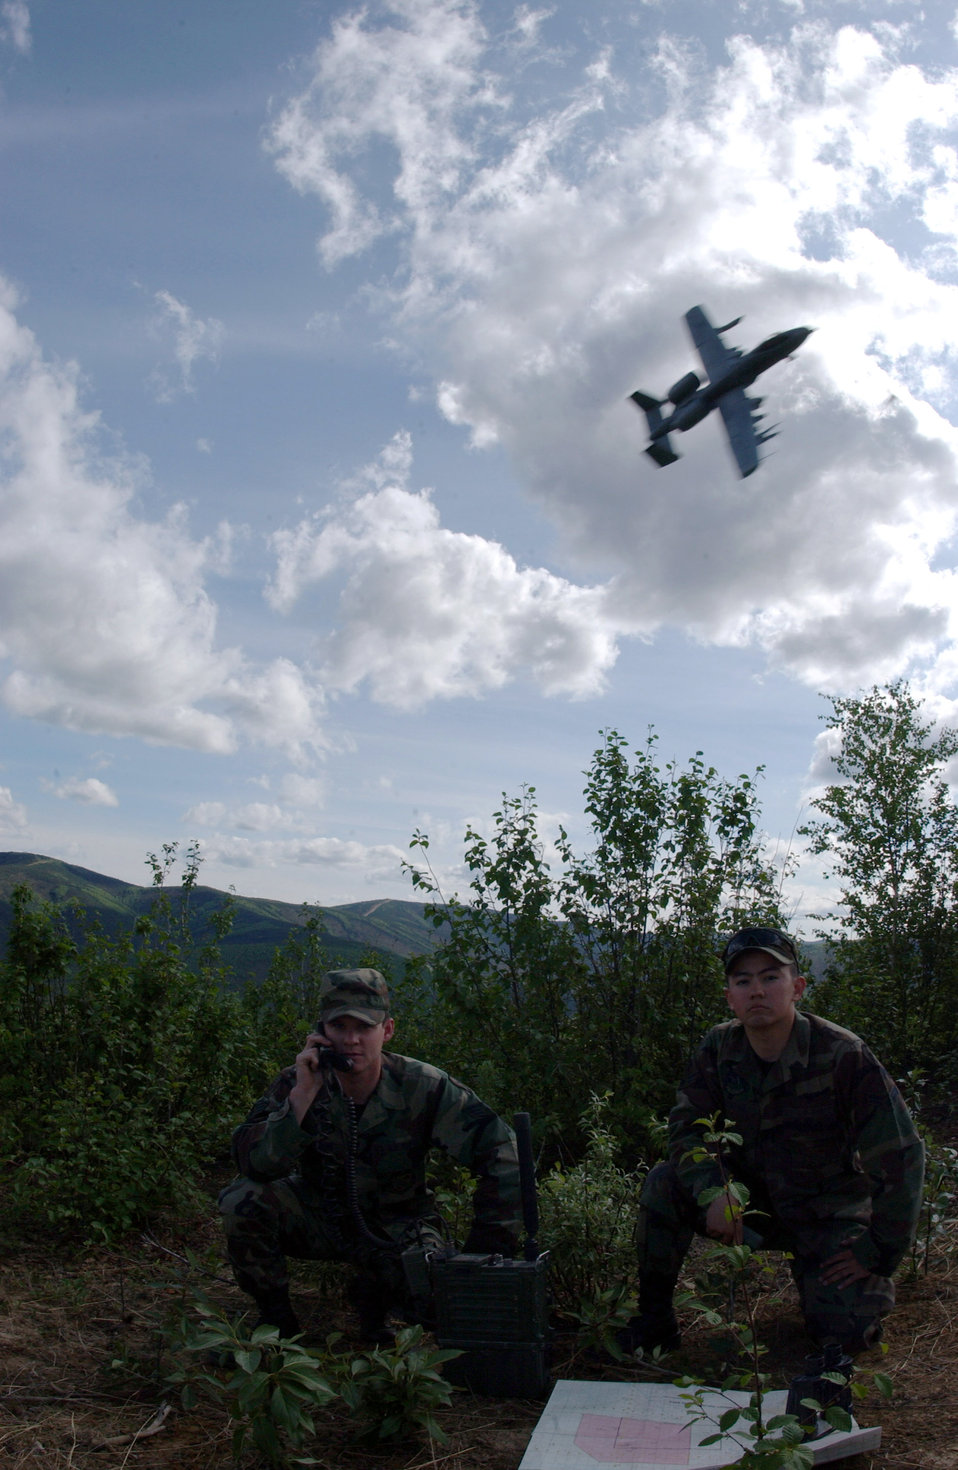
Air to ground power

Senior Airman John Tranum and Airman 1st Class Steve Vonack use a PRC-117 multiband tactical radio to communicate with aircraft during an exercise May 29 on the Pacific Alaska Range Complex in Alaska. Airmen Tranum and Vonack are assigned to the 3rd Air Support Operations Squadron tactical air control party from Fort Wainwright, Alaska. 3rd ASOS members coordinate, request and control close-air support, theater airlift, and reconnaissance.